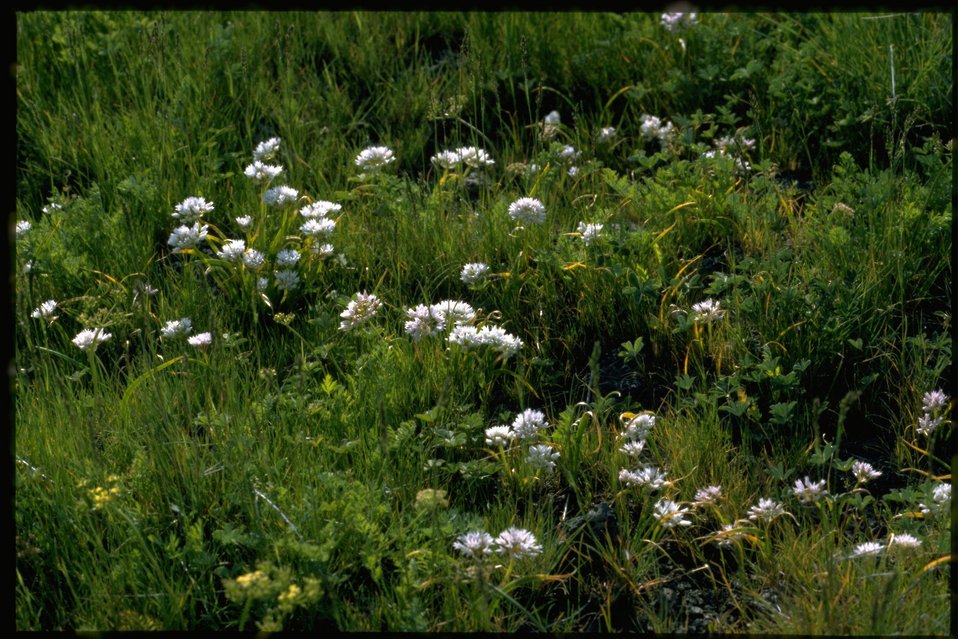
Farshot of Tolmie's Onion, Allium Tolmiei, wildflowers.